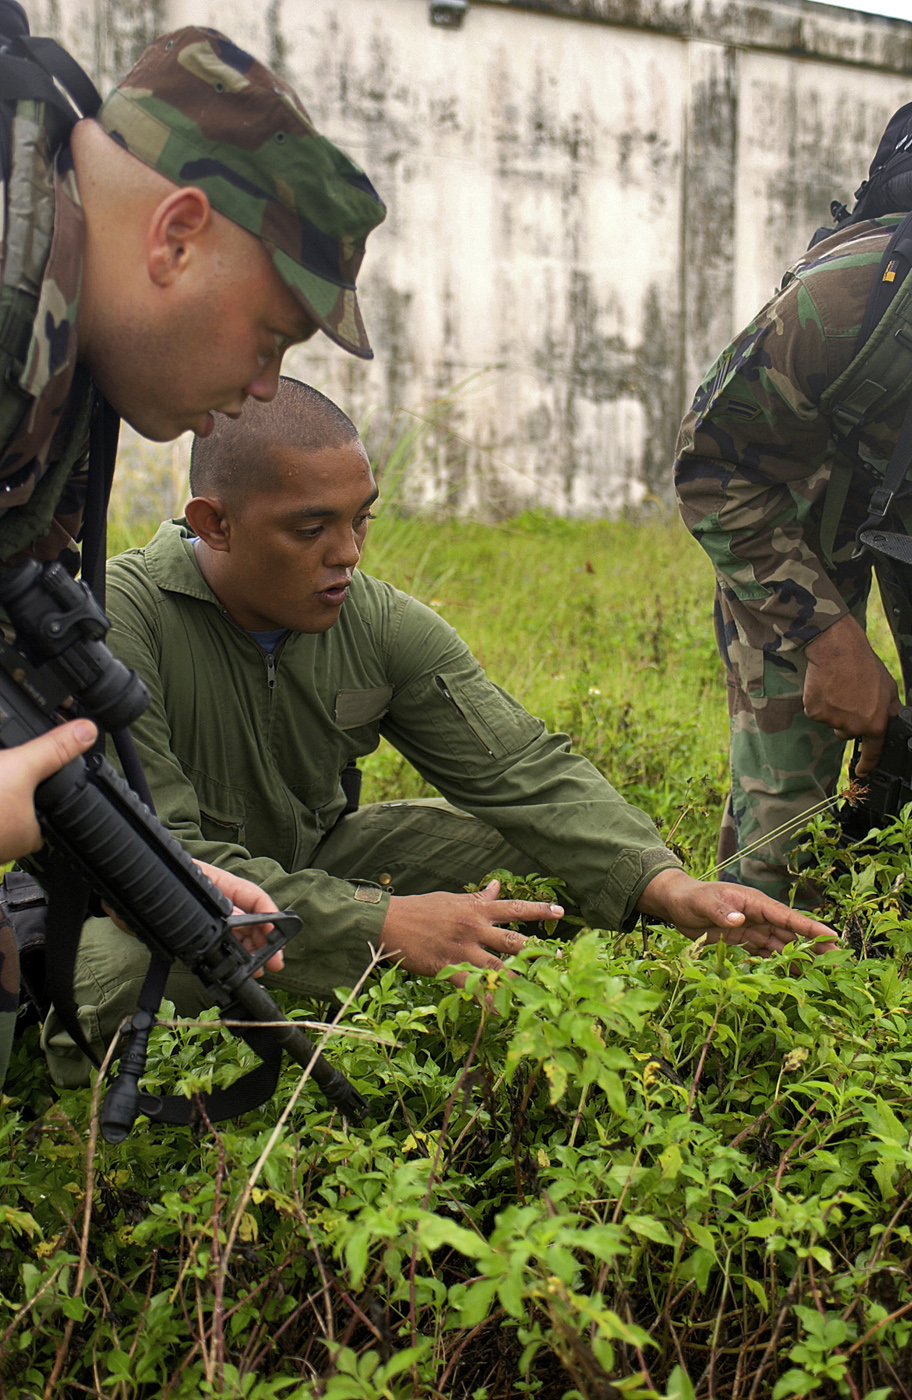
Through the jungle

ANDERSEN AIR FORCE BASE, Guam -- Gilbert Augon instructs Staff Sgt. Darrell Simpson on what to look for when tracking a fugitive through lush vegetation Nov. 15. The Airmen with the 613th Contingency Response Group are learning tactical tracking techniques from the Guam Police Department during a weeklong course through the jungles of Guam. Mr. Quitugna is a Guam Police Tactical Tracker experienced in the unique methods that Sergeant Simpson will need in the on-base jungle.